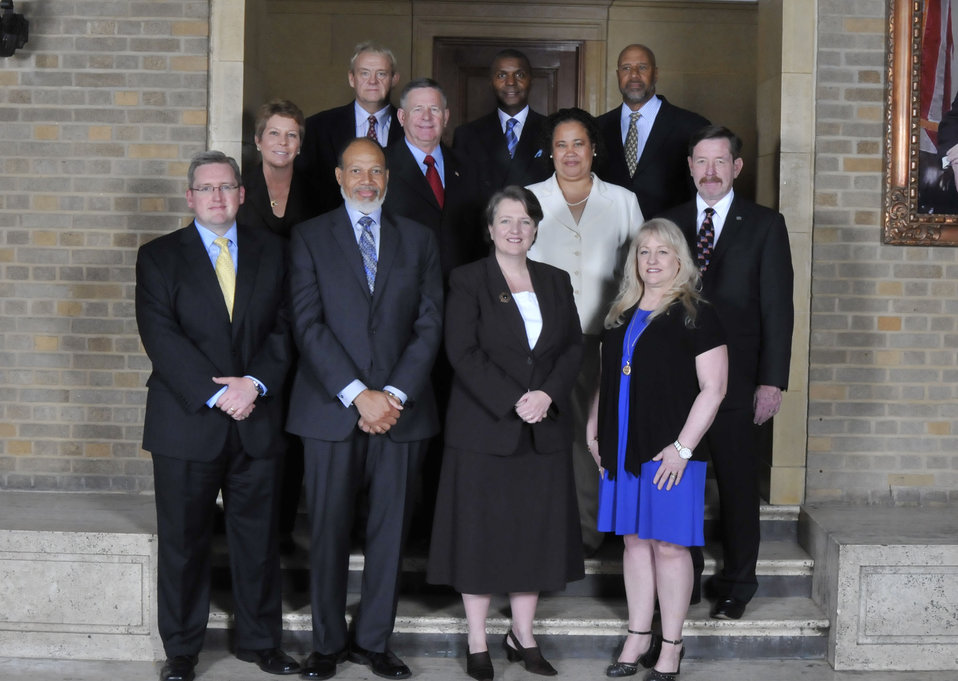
USDA Labor Management Forum, Office of Human Resources Management, Washington, DC. Debra Arnold (Rural Development) and William P. Milton., Group Leaders. For outstanding service implementing Executive Order 153522, Creating labor-Management Forums to Improve Delivery of Government Services.
On September 14, 2011 in the patio of the Whitten Building Patio of the US Department of Agriculture in Washington, DC.